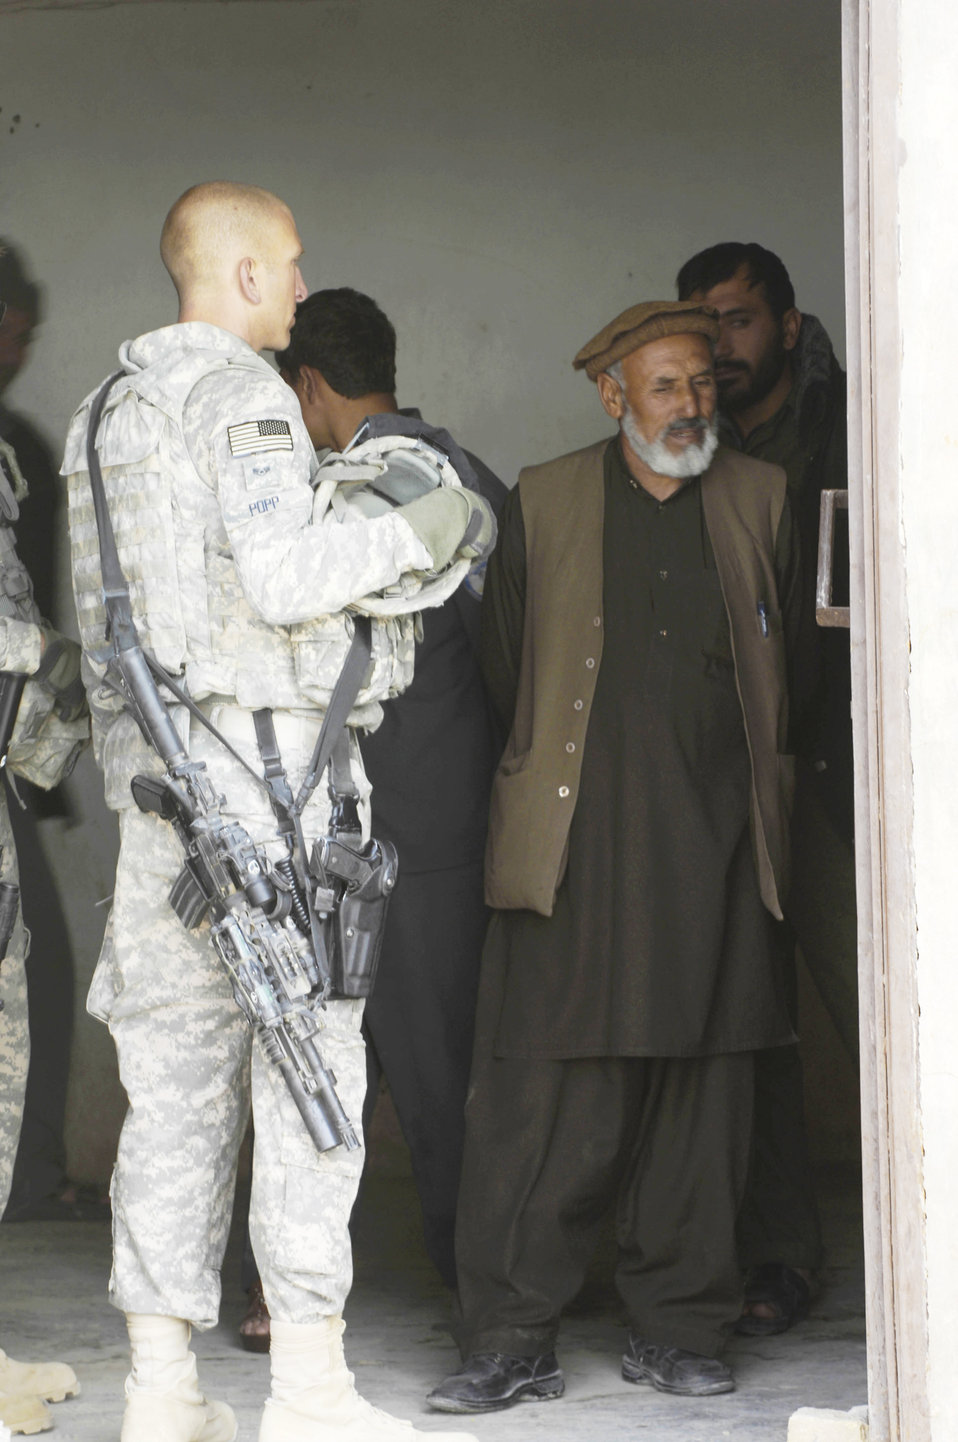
Security forces Airmen, Soldiers mentor Afghan prison guards

Staff Sgt. David Popp meets with Afghan prison officials during a mentoring session Oct. 28, 2009, in Qalat, Afghanistan. Sergeant Popp, a security forces Airman assigned to the Zabul Provincial Reconstruction Team, is deployed to the region from Creech Air Force Base, Nev. He works with the guards, helping them become better at handling prisoners within the compound. The mission is just one of many the PRT takes on, which can range from foot patrols to working with government officials.